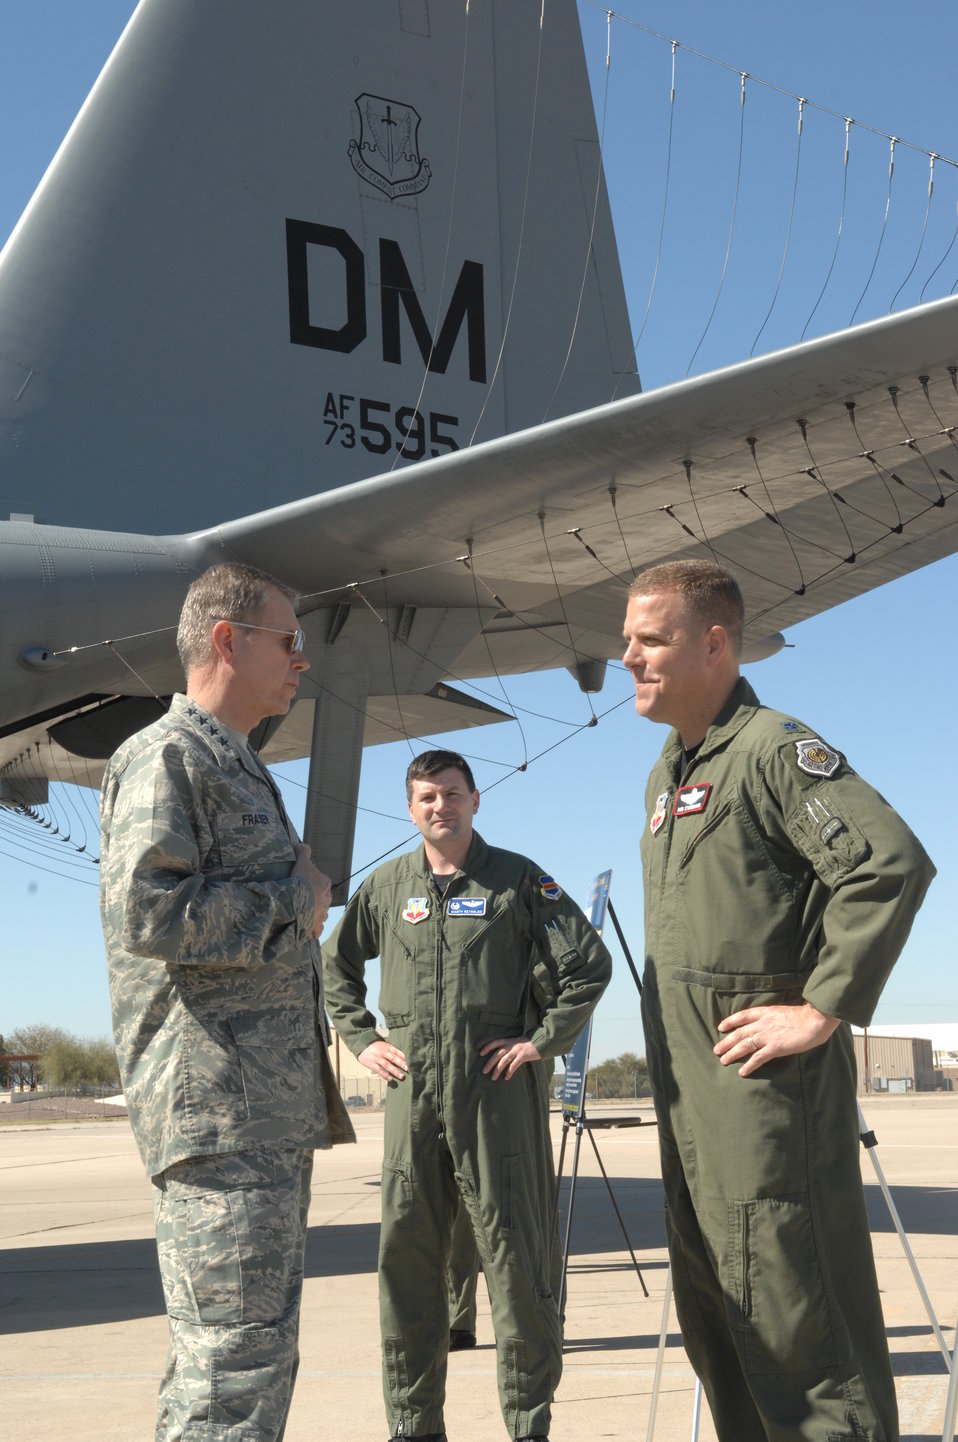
ACC leader visits Davis-Monthan Airmen

Gen. William M. Fraser III speaks to Lt. Col. Marty Reynolds (center), and Lt. Col. Bob Stonemark (right) on the flightline during his tour of Davis-Monthan Air Force Base, Feb. 23, 2010. General Fraser is the commander of Air Combat Command. Colonel Reynolds is the 42nd Electronic Combat Squadron commander. Colonel Stonemark is the 43rd Electronic Combat Squadron commander.